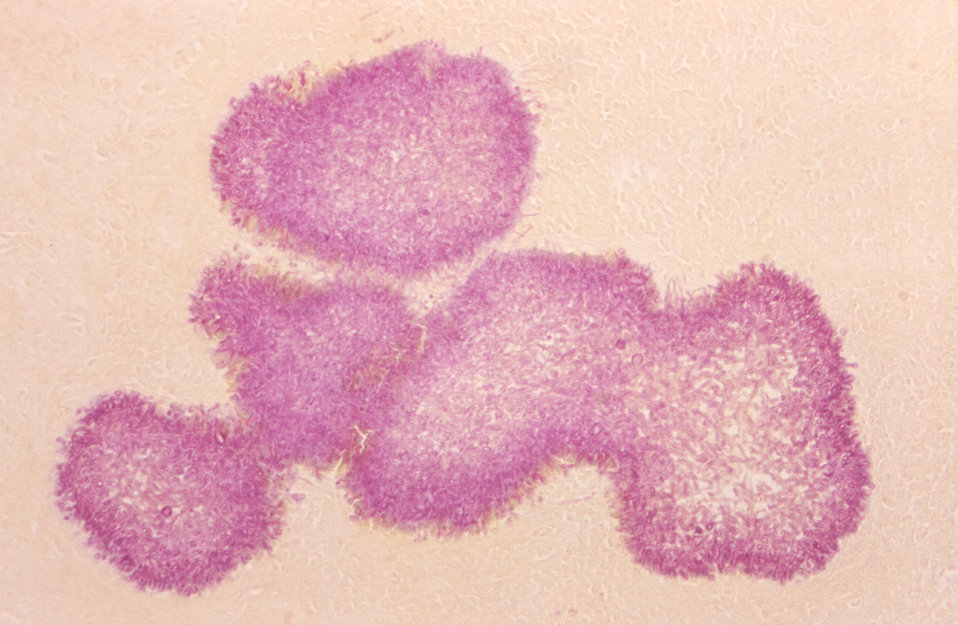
Under a relatively low magnification of 125X, this Gridley-stained photomicrograph revealed some of the ultrastructural morphology displayed by a mycetoma caused by Acremonium sp. fungal organisms.